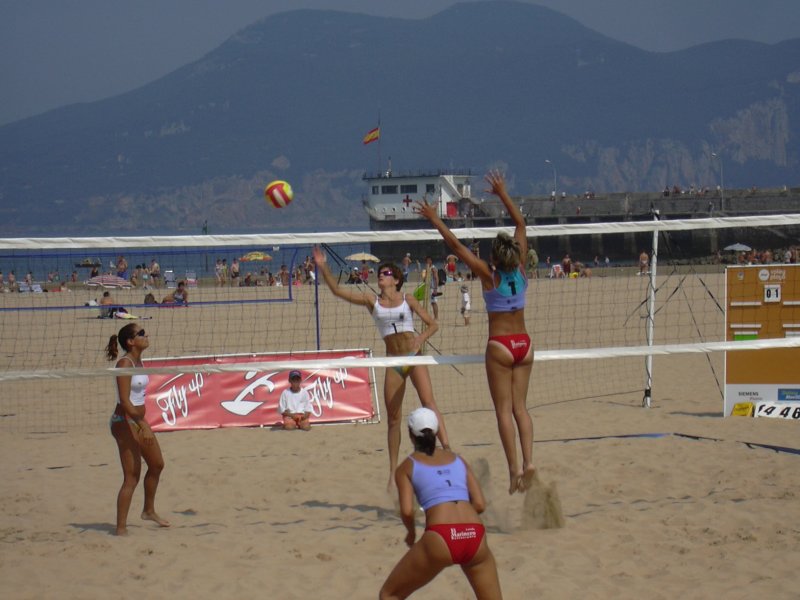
Beach Volleyball Spanish Championship 2004 in Laredo (Cantabria) Español: Campeonato de España de Vóley Plata 2004 en Laredo (Cantabria) Français : Championnat d'Espagne de Beach Volley en 2004 à Laredo (Cantabria)